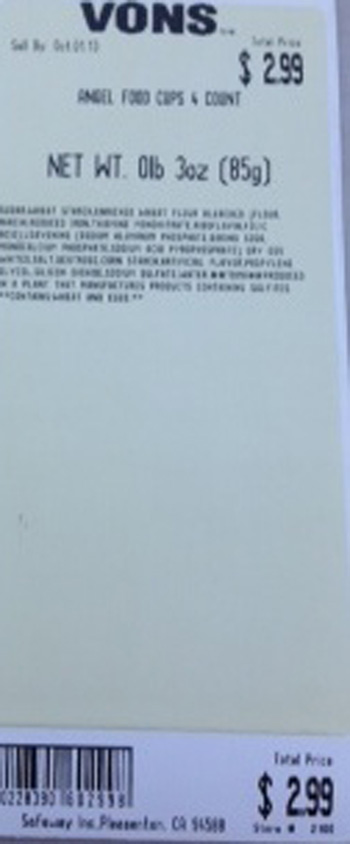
RECALLED – Angel Food Cakes

September 26, 2013 – Product Recall – Safeway Recalls Several Varieties of Angel Food Cake Due to Undeclared Soy and Milk Allergens.